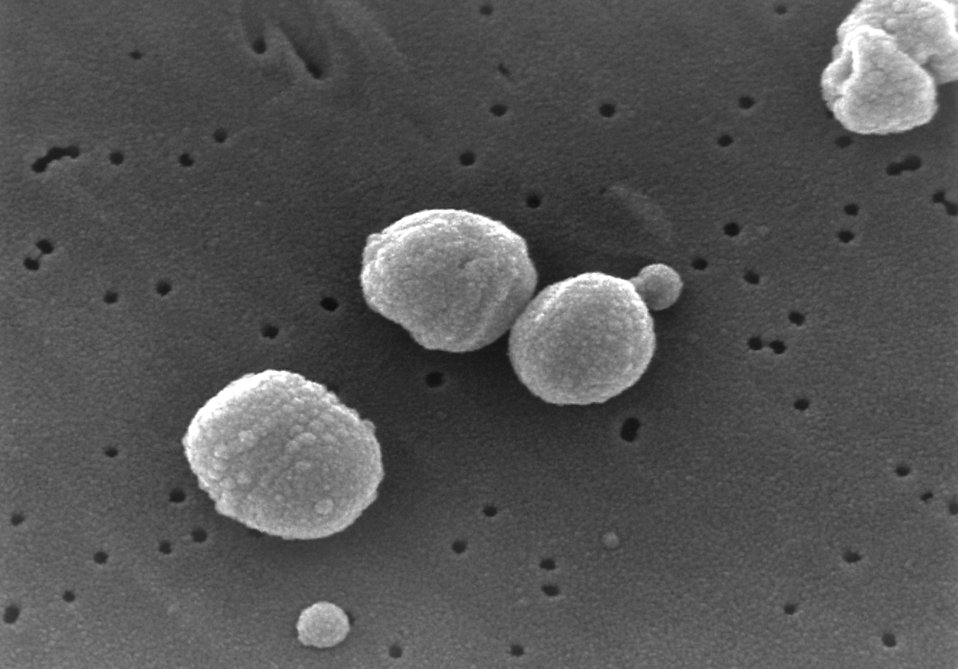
Scanning electron micrograph (SEM) of a number of Gram-positive Streptococcus pneumoniae bacteria.